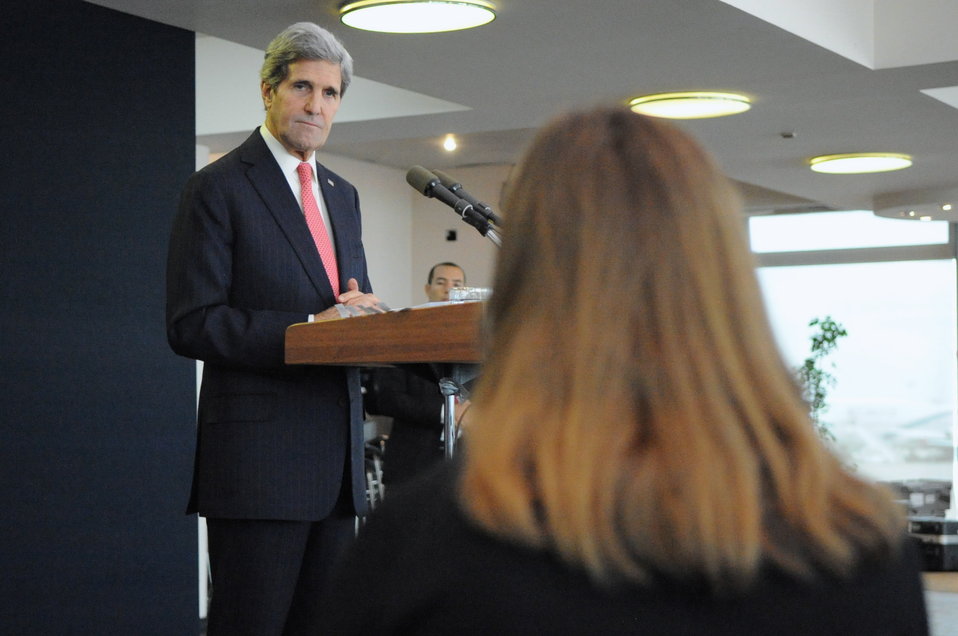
Secretary Kerry Listens to a Question During Tel Aviv News Conference

U.S. Secretary of State John Kerry listens to a question from a reporter during a news conference in Tel Aviv after meetings in Israel with Prime Minister Benjamin Netanyahu on December 6, 2013.